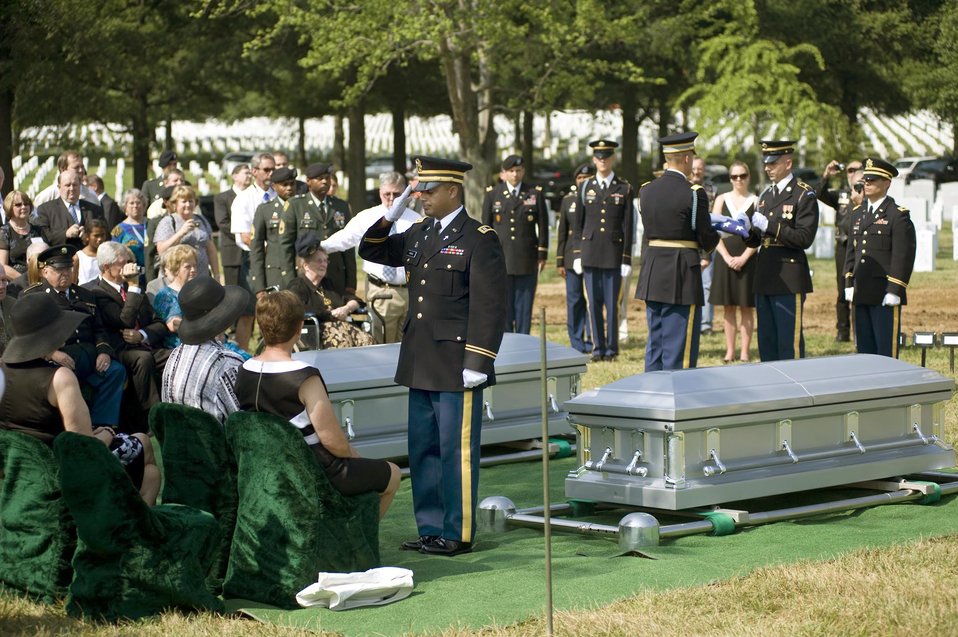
Seven WWII Airmen buried at Arlington National Cemetery

Army Chaplain (Capt.) John Gabriel salutes a folded American flag that was presented to Virginia Doolittle (seated), a surviving family member of 1st Lt. Joseph J. Auld, one of the seven Airmen who were interned July 15, 2010 at Arlington National Cemetery, Va.